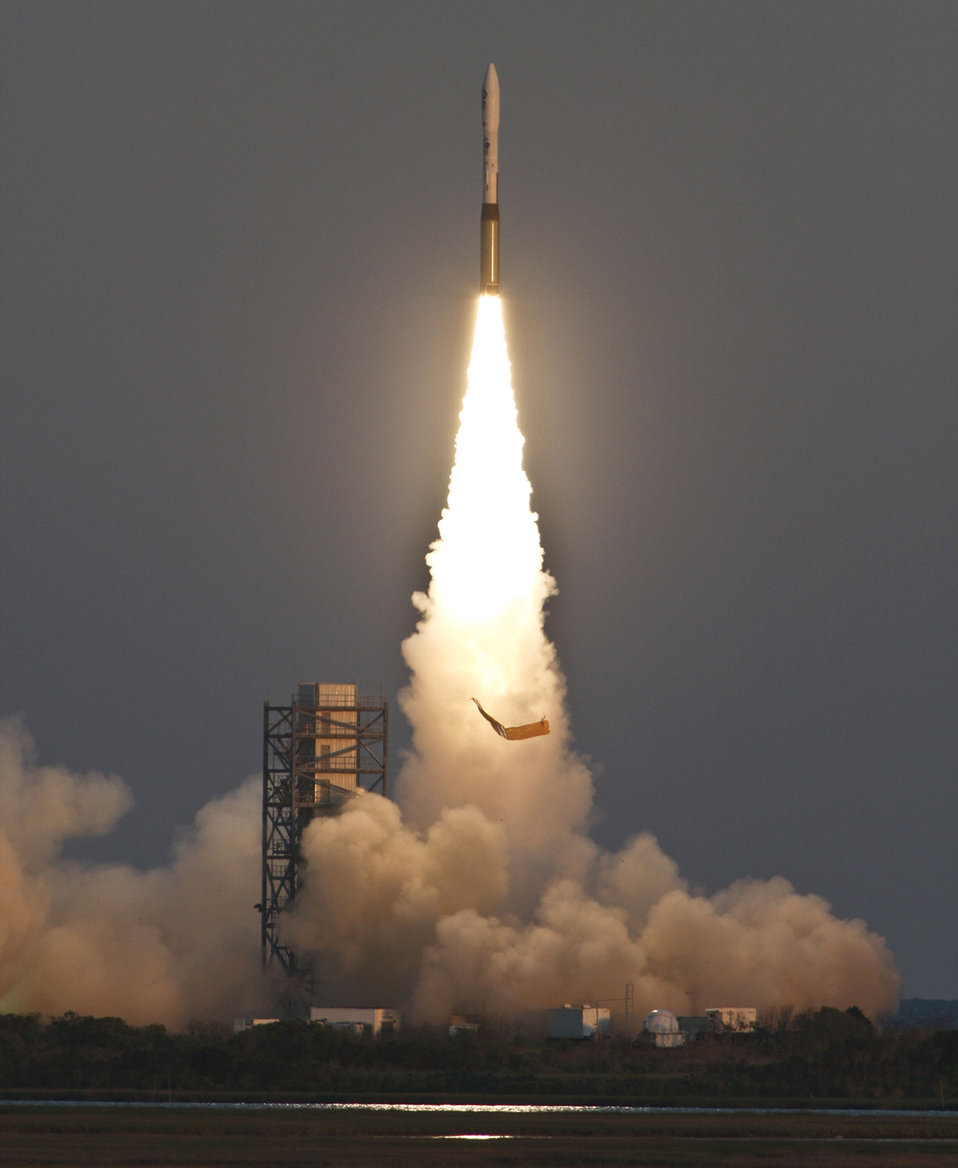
To infinity... and beyond

A Minotaur I launches May 19 from the Mid-Atlantic Regional Spaceport at the NASA Wallops Flight Facility at Wallops Island, Va. The payload is a military TacSat-3 satellite.